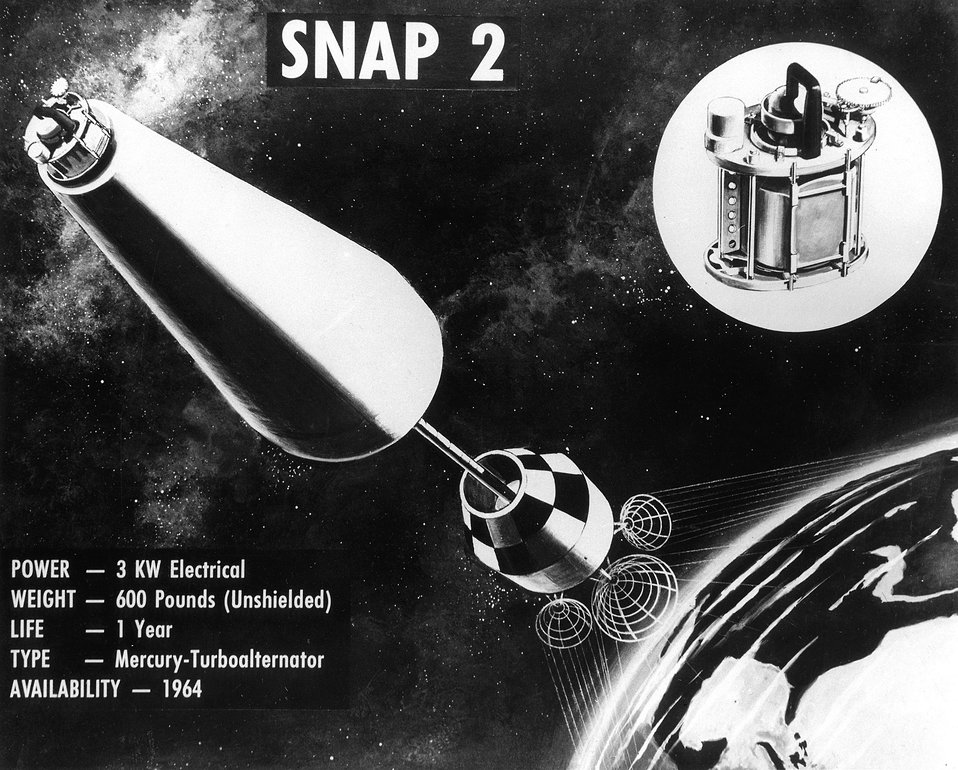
Even numbered SNAP units utilize very compare nuclear reactors to generate power. Drawing shows the SNAP 2 concept.